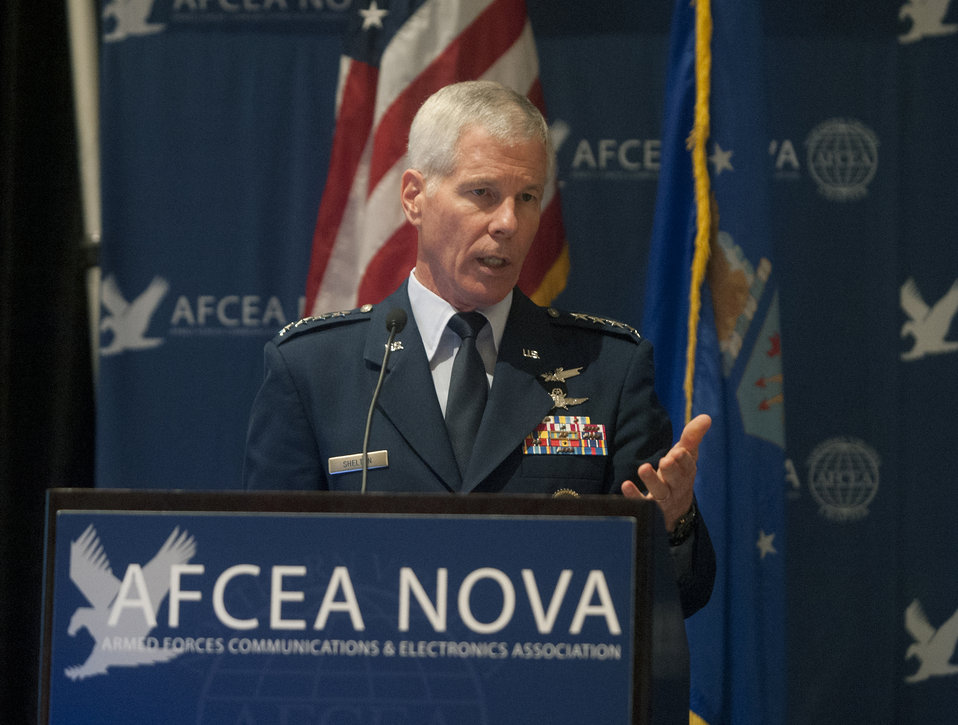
Gen. Shelton speaks to IT conference

Gen. William L. Shelton, commander of the Air Force Space Command, speaks during the 11th Annual Air Force IT Day at Tyson's Corner, Va., Oct. 11, 2012. The event is an anual one-day conference focused on issues and challenges facing the future Air Force.